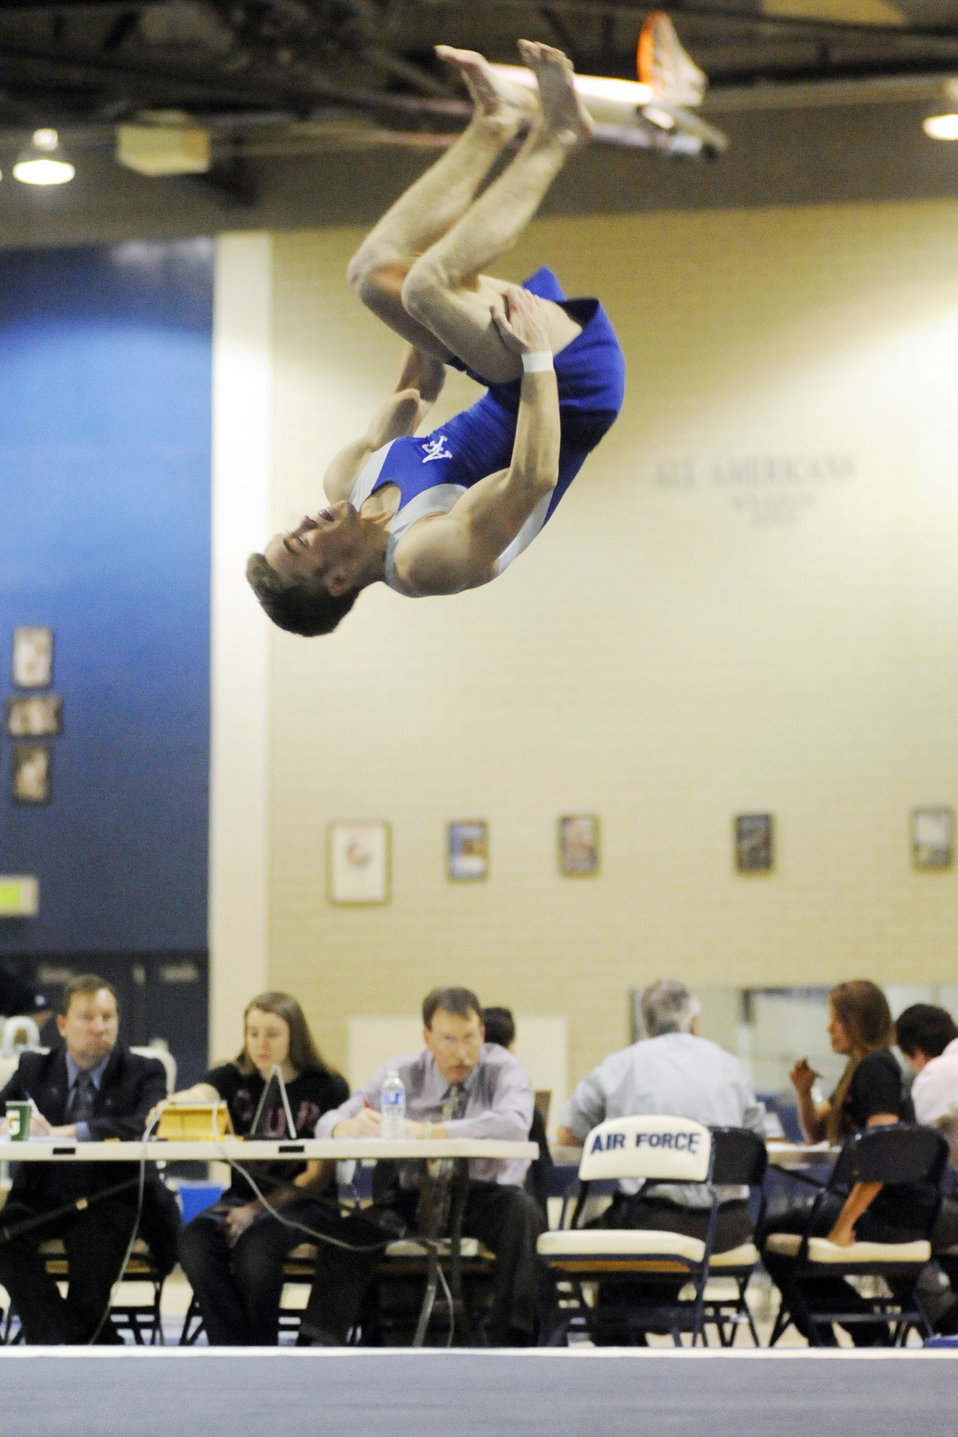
Falcon gymnasts lose in home final

Falcon junior Nash Mills flips while performing his floor routine during the Falcons home finale against Illinois-Chicago at the U. S. Air Force Academy's cadet gymnasium in Colorado March 7, 2010. The Falcons set a new team record, beating their previous record of 342.55 which was set last year in Arizona, but fell to Illinois-Chicago 348.60 - 346.45. Mills tied for first place on the vault with the Falcons Joel Uptmor, both with scores of 15.75. He also tied for second on the high bar with a 14.25, and within the top five for both the still rings (14.7) and parallel bars (14.15).